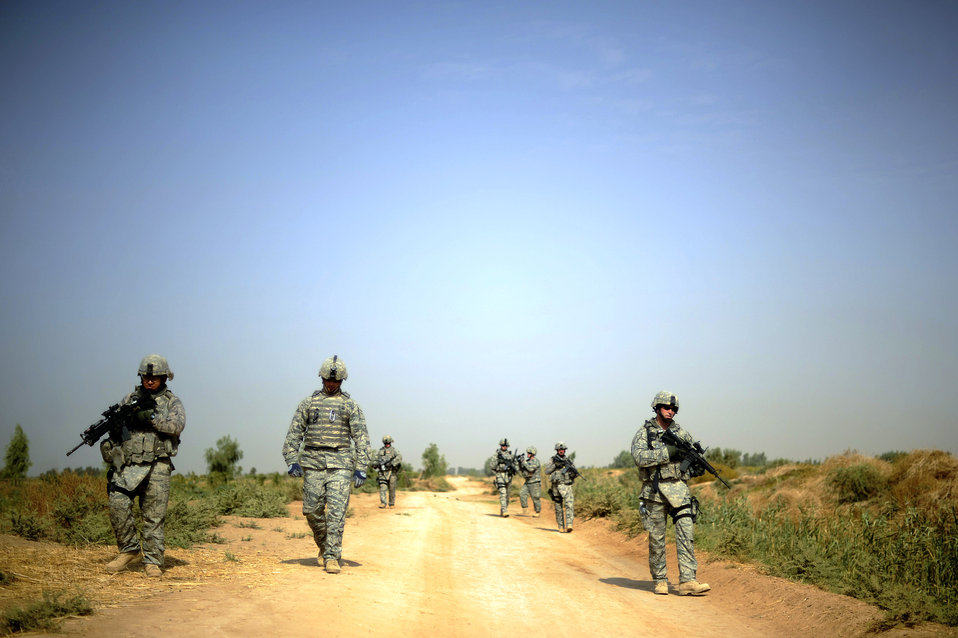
Airmen patrol outside to protect inside

Airmen from the 532nd Expeditionary Security Forces Squadron perform a force protection patrol Oct. 17, 2009, outside Joint Base Balad, Iraq. The 532nd ESFS patrols provide a security presence intended to deter anyone who would do harm to the people who live and work at the base.